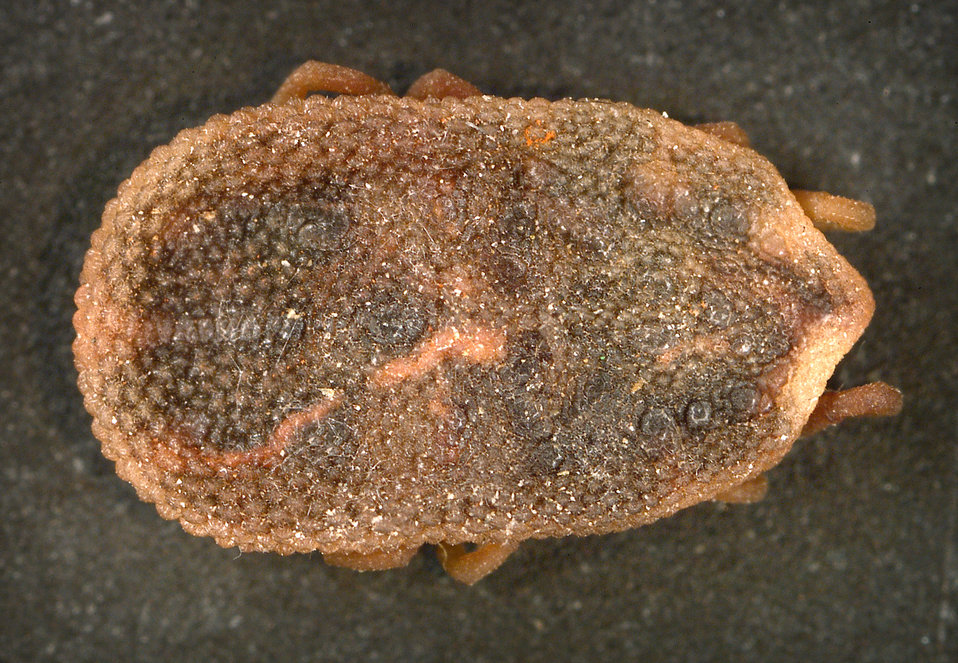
This is a dorsal view of the 'soft tick' Carios kelleyi, formerly Ornithodoros kelleyi, or the 'Bat Tick'.